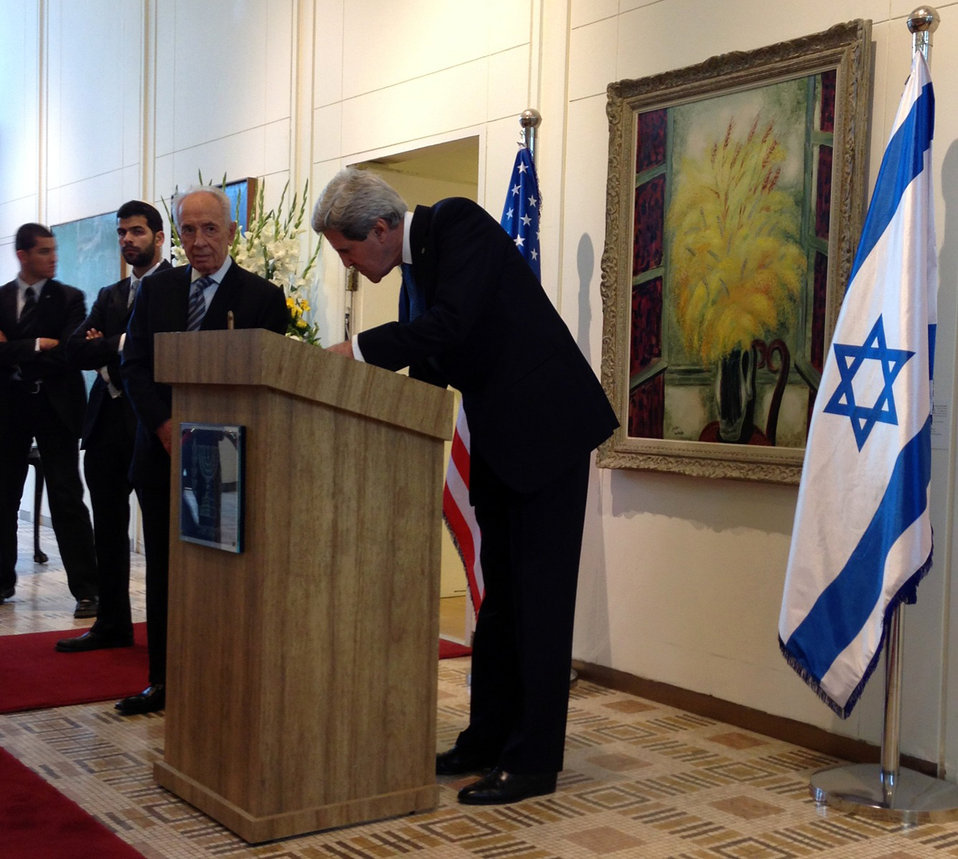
Secretary Kerry Signs Guest Book of Israeli President Peres

U.S. Secretary of State John Kerry signs the guest book of Israeli President Shimon Peres at the President's residence in Jerusalem, April 8, 2013.